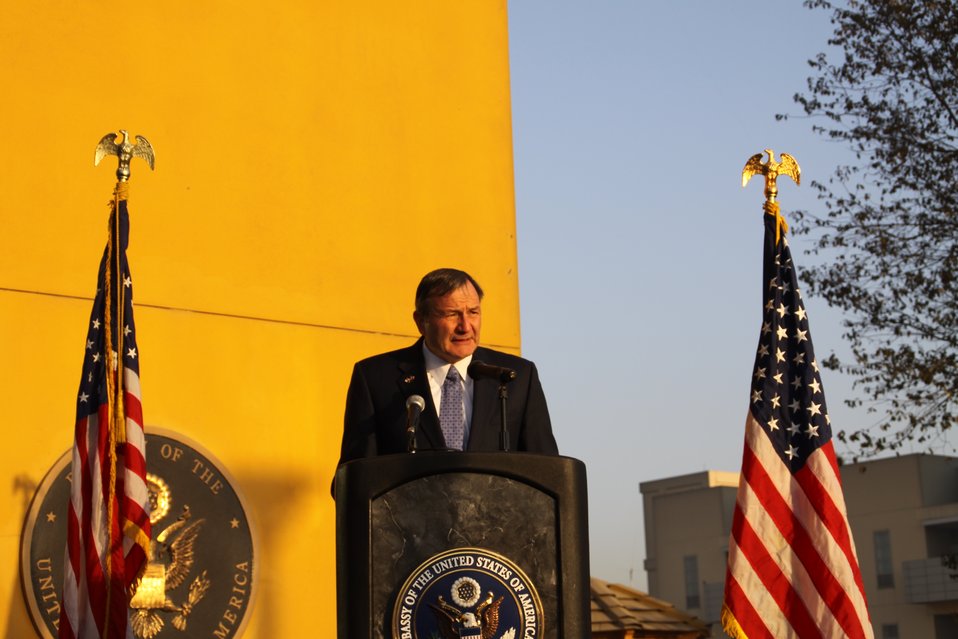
Ambassador Eikenberry